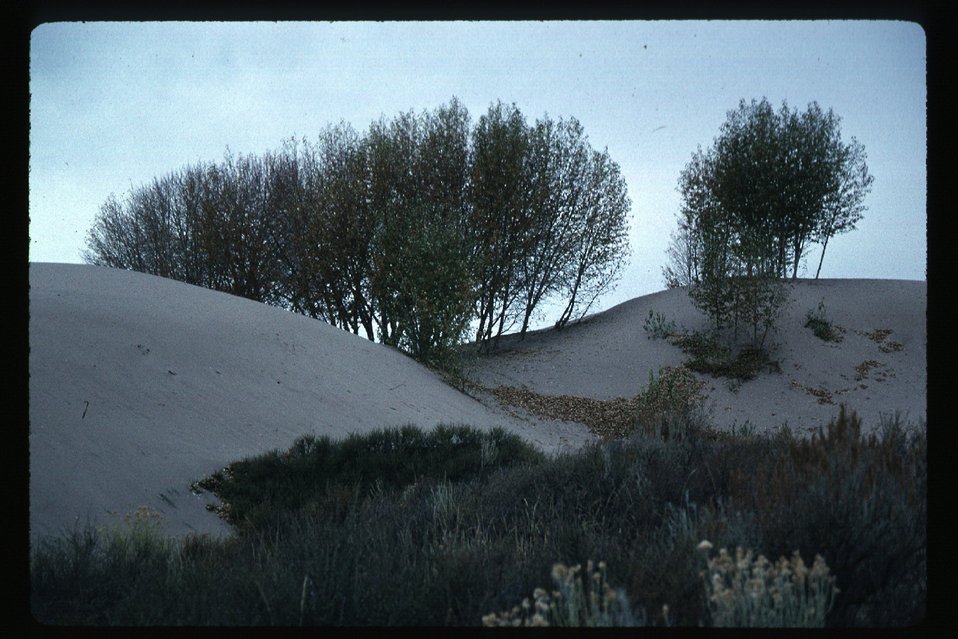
Recreation St Anthony Sand Dunes Overview Idaho Falls Field Office USRD Upper Snake River District